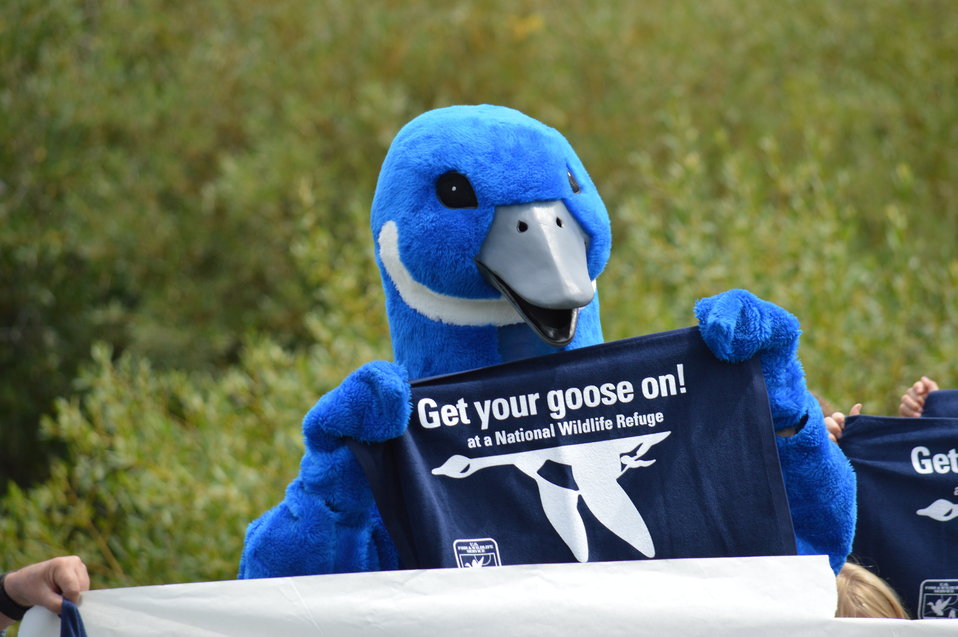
Get Your Goose On! - National Elk Refuge Style

On August 10, 2012 the U.S. Fish and Wildlife Service and Partners celebrated the 100 year anniversary of the establishment of the National Elk Refuge. In these photos, young attendees, along with Puddles the Blue Goose and the National Elk Refuge's mascot, showed us how to Get Your Goose On! with style.